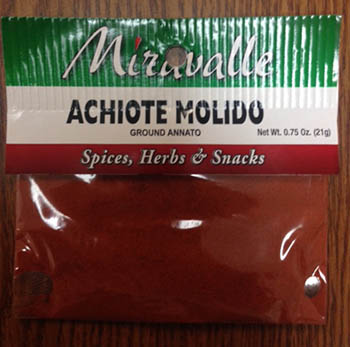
RECALLED – Ground Annato

April 23, 2014 – Product Recall – Miravalle Foods, Inc. Recalls Ground Annato Because of Possible Health Risk.